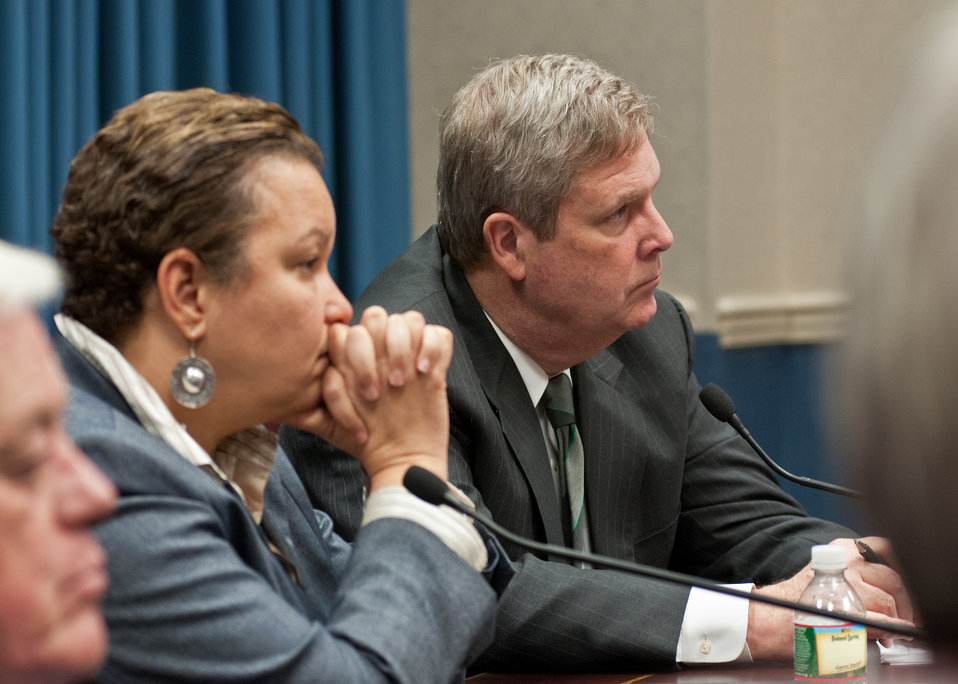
Agriculture Secretary Tom Vilsack (right) and Lisa Jackson, Administrator, Environmental Protection Agency (center) and commodity groups representing all aspects of agriculture met at the United States Department of Agriculture in Washington, D.C., to discuss mutual agricultural and environmental issues on Tuesday, December 14, 2011. To the right of Administrator Jackson is Gary Niemeyer, National Corn Growers.